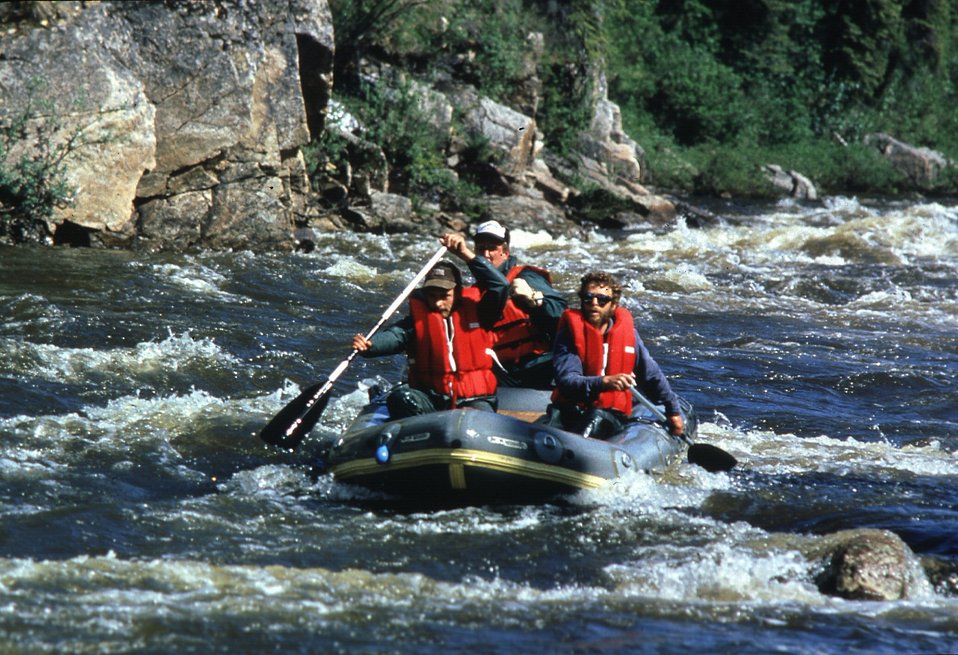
Canyon Rapids, Gulkana NWSR, Alaska